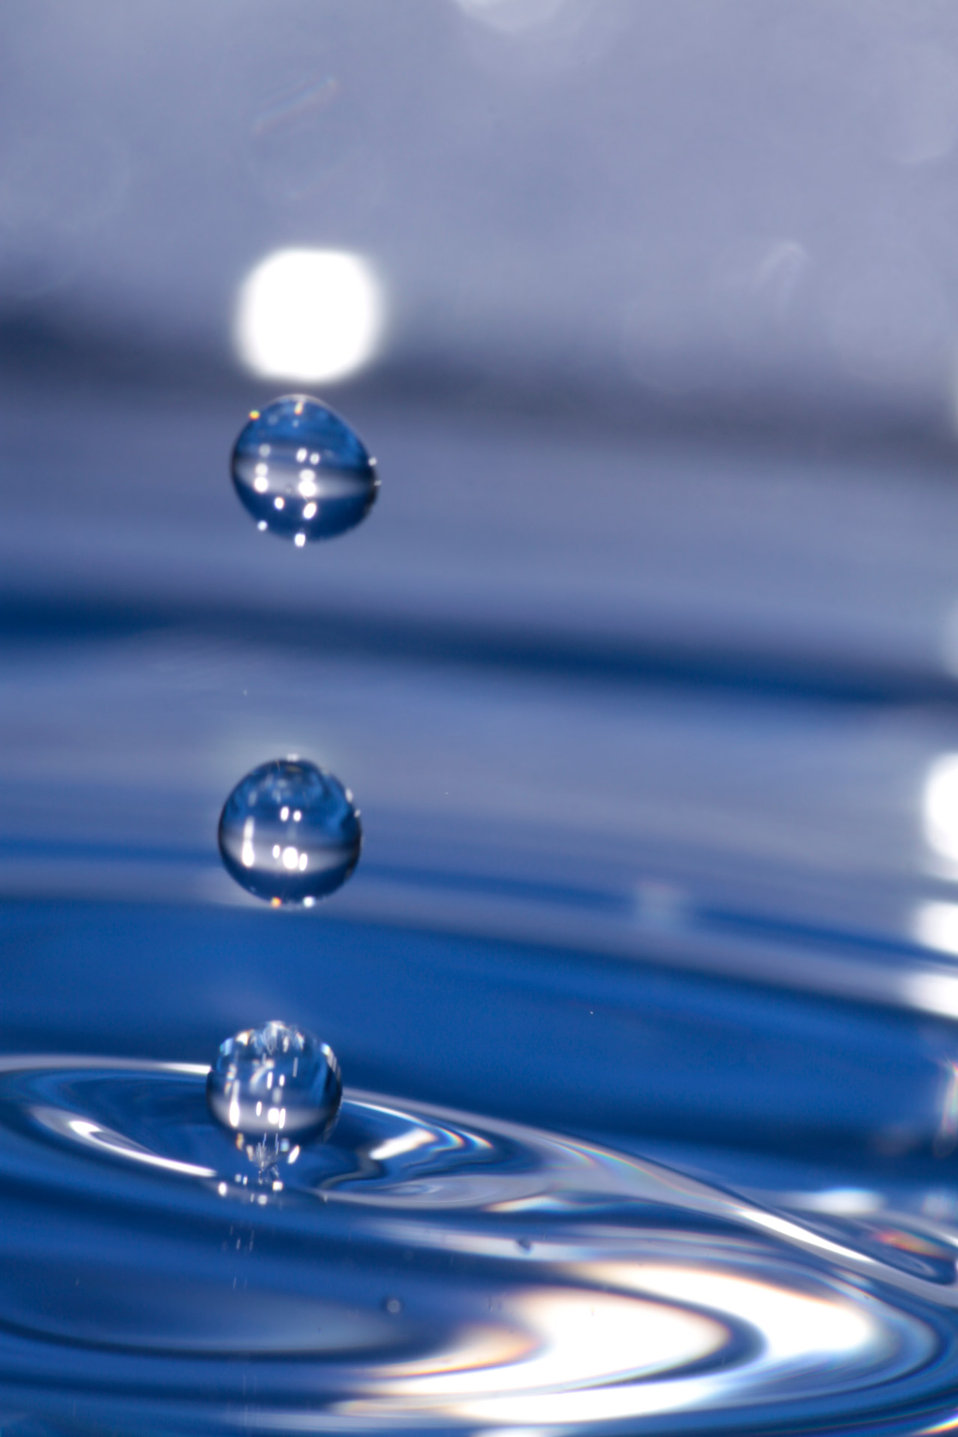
Water drop

Drops of water.